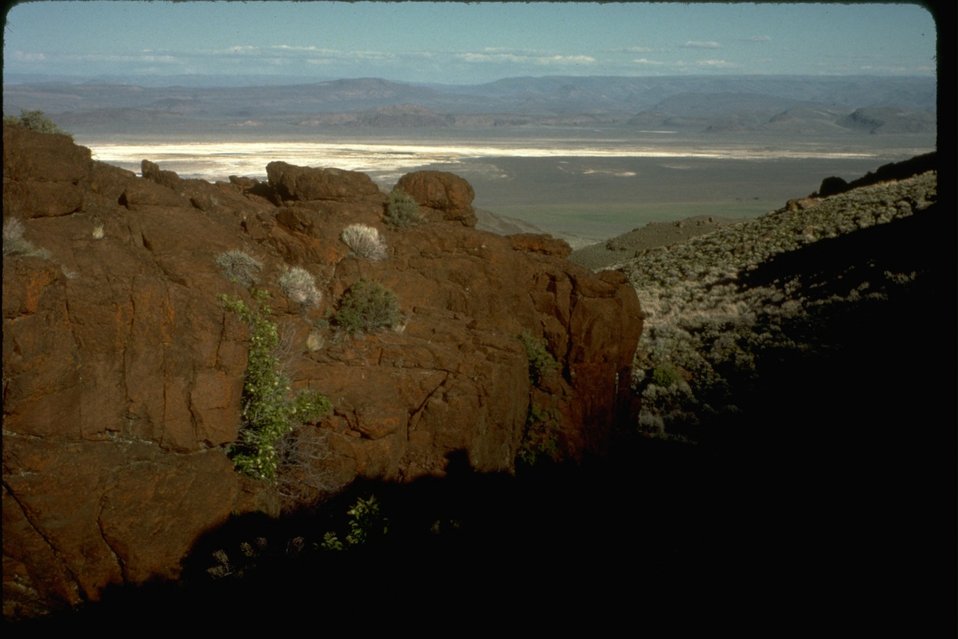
A long shot of wildflowers at the Alvord Peak and Rincon Wilderness Study Areas. OR 2-82 and 2-83.